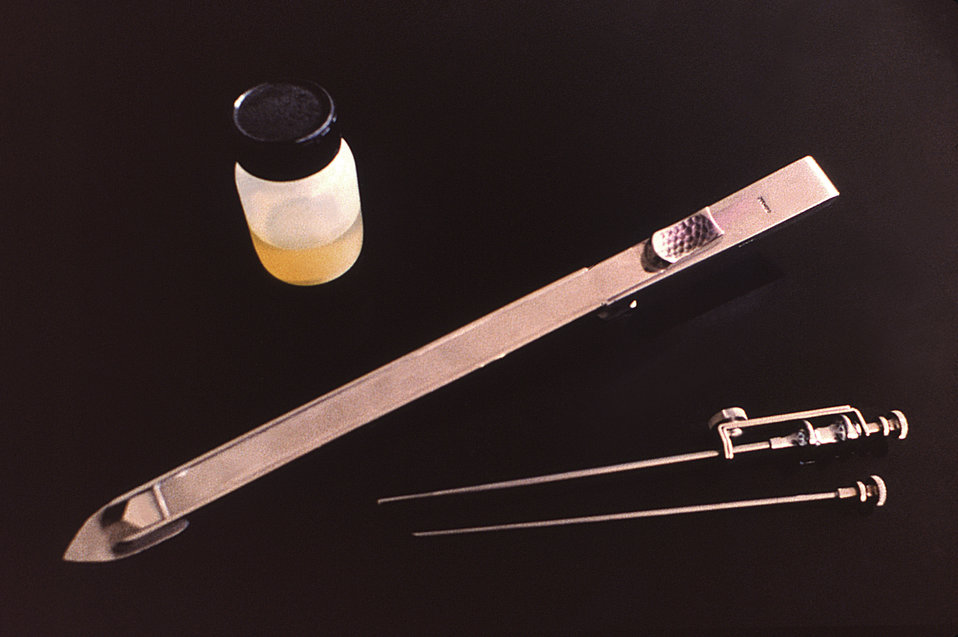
This photograph depicts the items used in the postmortem extraction of a liver specimen to be histologically examined for signs of liver disease. Included here, is a bottle of tissue fixative, a viscerotome, and a two-part biopsy needle, i.e., trocar and needle.